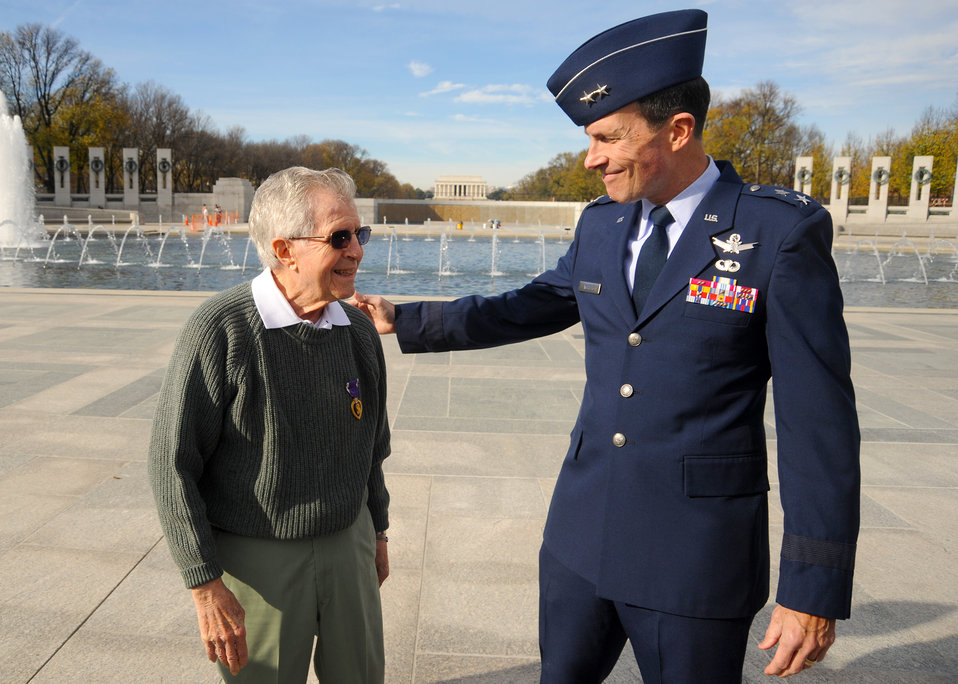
Moppert Purple Heart

Retired Maj. Gen. Robert M. Worley II presents former 1st Lt. Edward Moppert with a Purple Heart medal Nov. 26, 2011, at the World War II Memorial in Washington, D.C. Moppert was wounded and held as a prisoner of war during World War II, and he was never presented with nor did his records reflect receiving the medal. Worley and members of the Air Force Analysis Assessments & Lessons Learned at the Pentagon, worked with Defense Department officials to get his official records corrected.